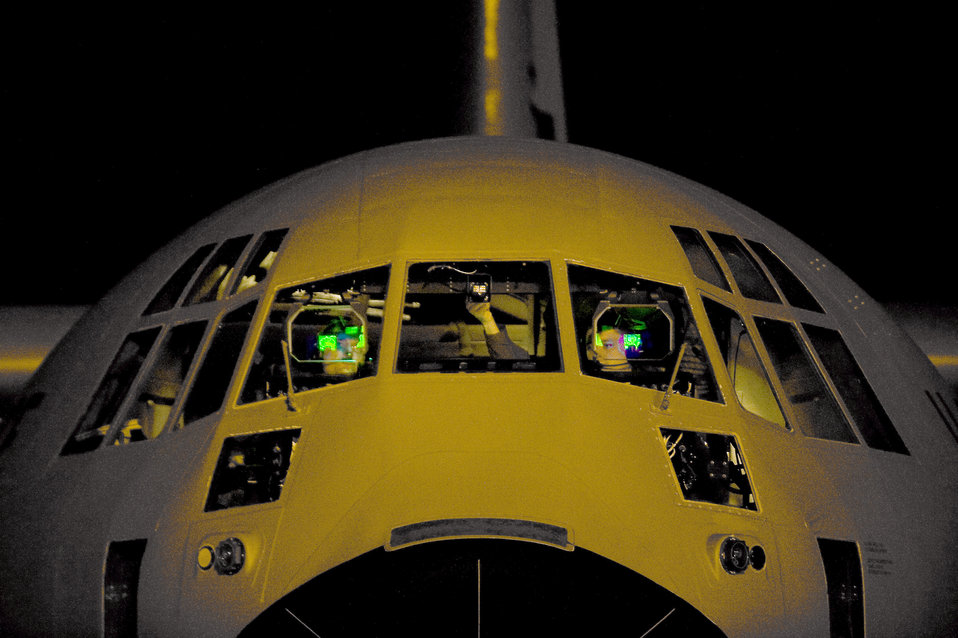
Hurricane hunters on Igor

Airmen prepare for a mission to collect data on Hurricane Igor Sept. 17, 2010, on St. Croix, Virgin Islands. Known as the